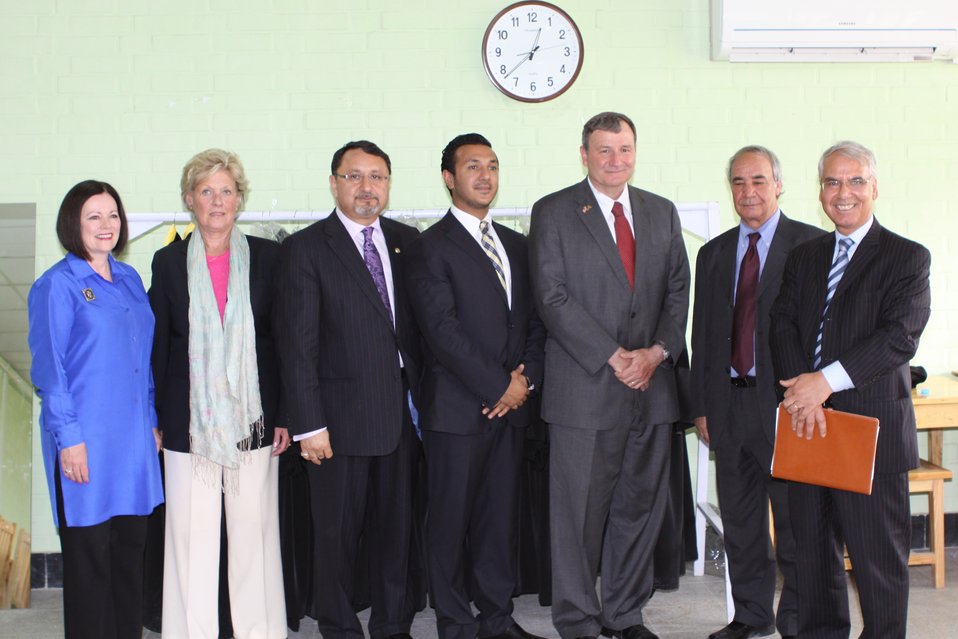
100526 AUAF Graduation 344